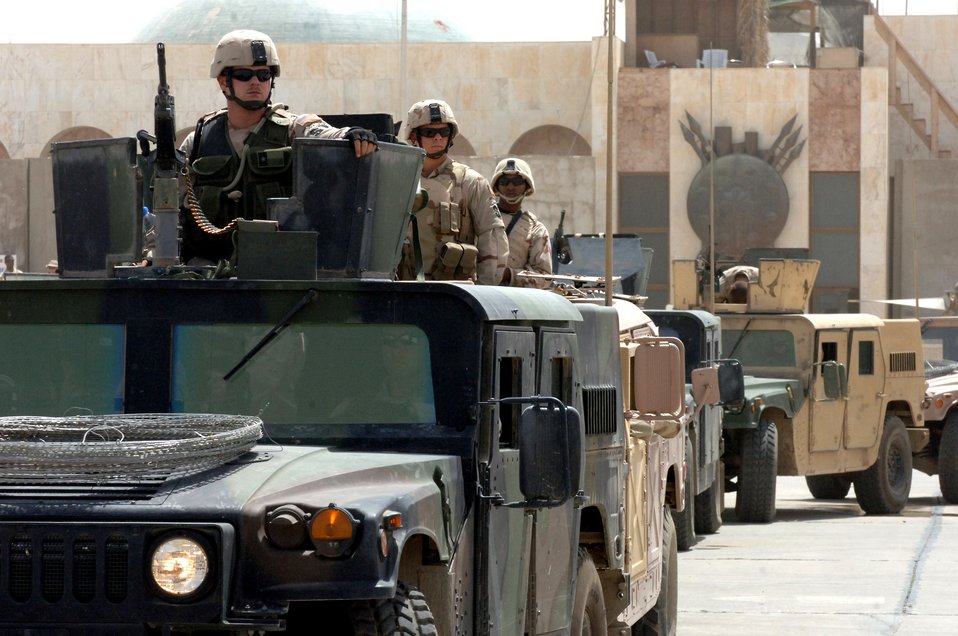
Keeping the base safe

Senior Airman Jonathon Ray sits atop the lead vehicle of a convoy of Air Force Humvees waiting to roll during a Army and Air Force joint operation in support of a presidential security mission in Baghdad on June 13, 2006. Security forces, explosive ordnance disposal and medical Airmen participated in the exercise. All were from the 447th Air Expeditionary Group. Airman Ray is deployed from the Texas Air National Guard's 147th Fighter Wing at Ellington Field in Houston.